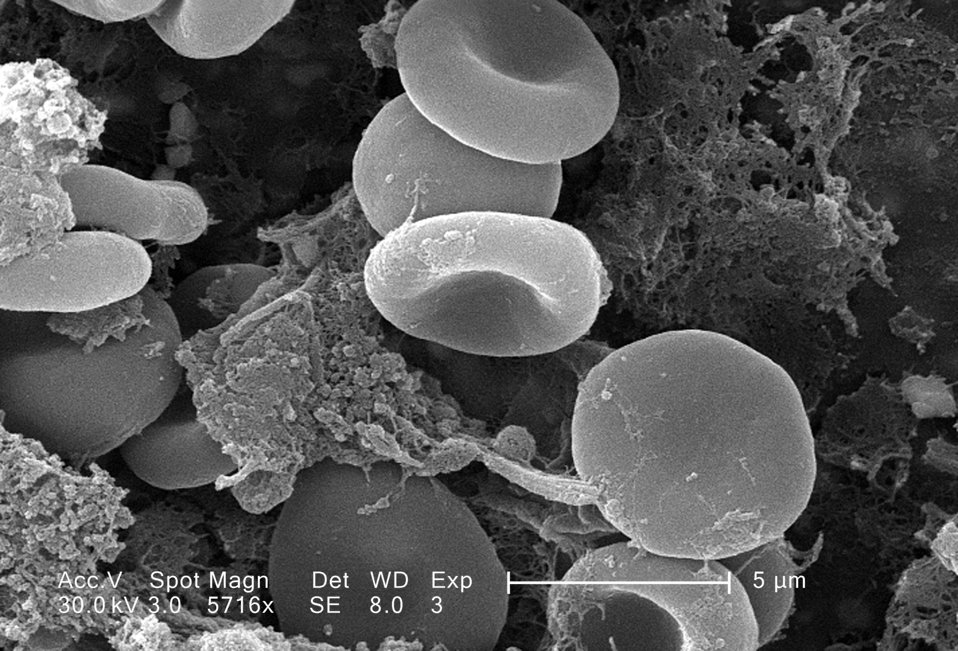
This scanning electron micrograph (SEM) depicted a number of red blood cells found enmeshed in a fibrinous matrix on the luminal surface of an indwelling vascular catheter; Magnified 5716x.